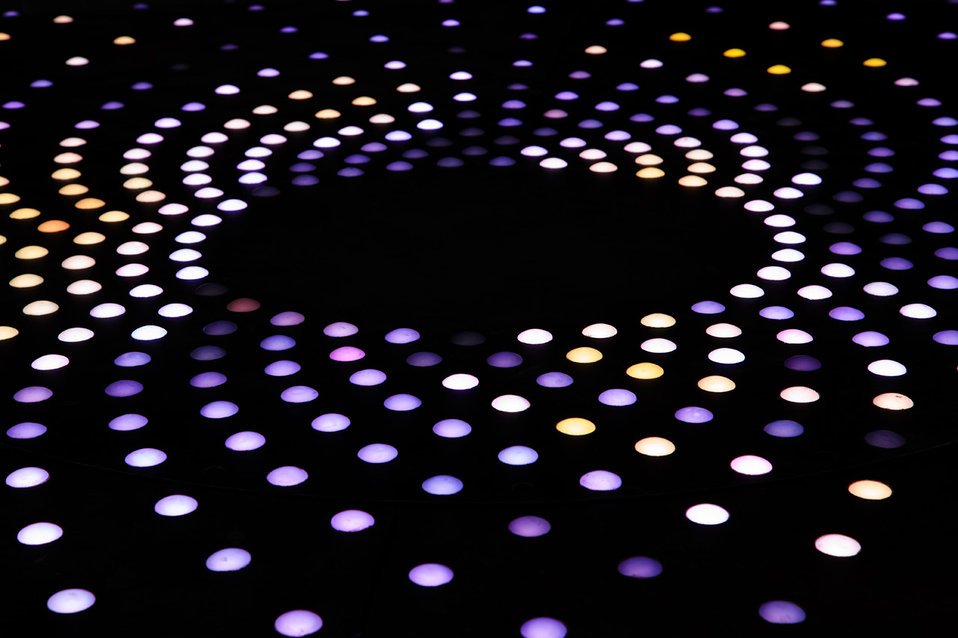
Colorful dots

Light sculpture made from shining colorful dots in london.